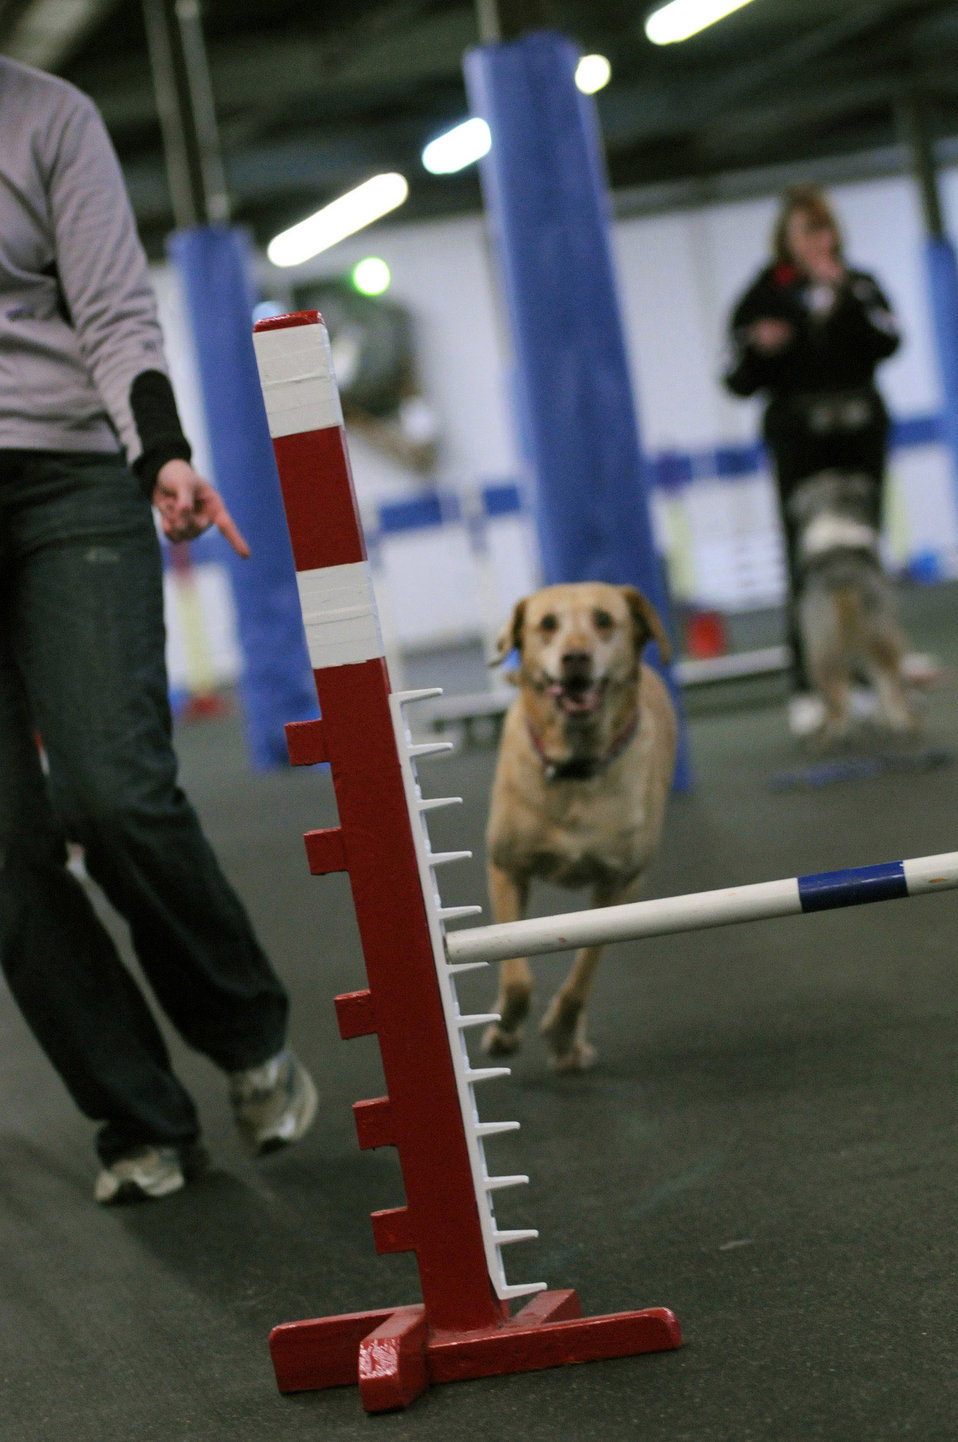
Rags to Riches in the American Heartland

First Lt. Heather Greatting instructs Zoey, her 9-year-old Labrador retriever, to jump over a hurdle Feb. 11 during agillity training. The lieutenant obtained Zoey from a Labrador rescue center and currently competes with her in canine agility. Lieutenant Greatting is a space intelligence surveillance and reconnaissance systems employment analyst with the National Air and Space Intelligence Center at Wright-Patterson Air Force Base, Ohio.